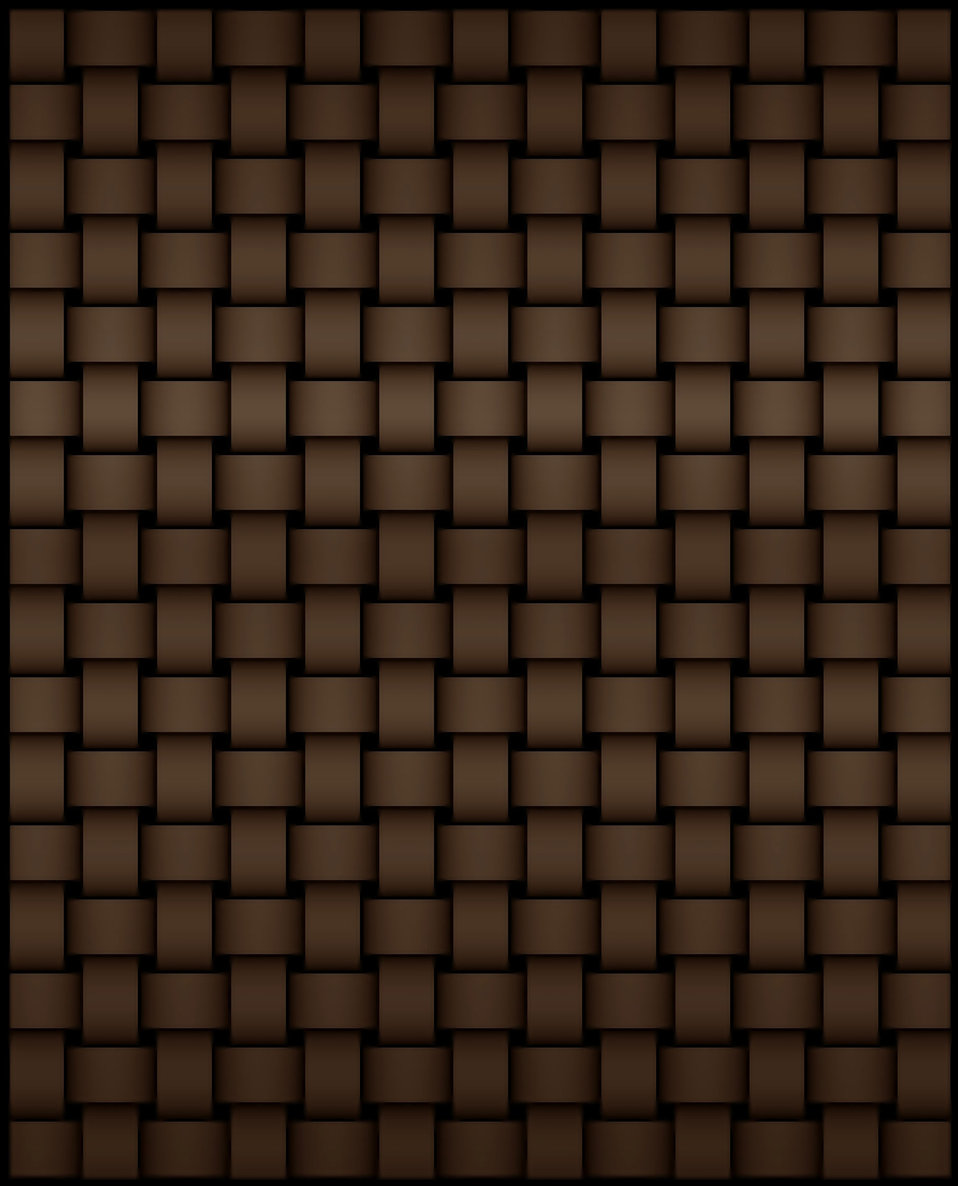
Brown basketweave background

Brown basketweave.